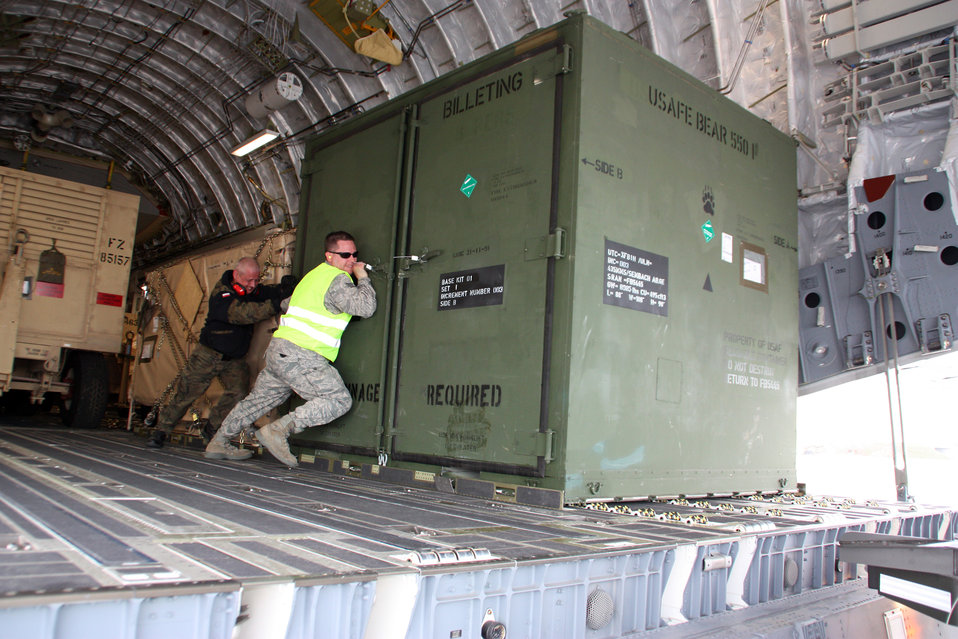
Heavy Airlift Wing

Airmen from the multinational Heavy Airlift Wing move a billeting kit March 30, 2010, in preparation for shipment to units in Afghanistan. HAW Airmen have moved more than 2.1 million pounds of war reserve material essential to surge operations supporting the International Security Assistance Force in Afghanistan. The HAW, based at Papa Air Base, Hungary, operates three C-17 Globemaster III aircraft independently of NATO's military command and comprises 12 nations that activated the unit July 27, 2009.